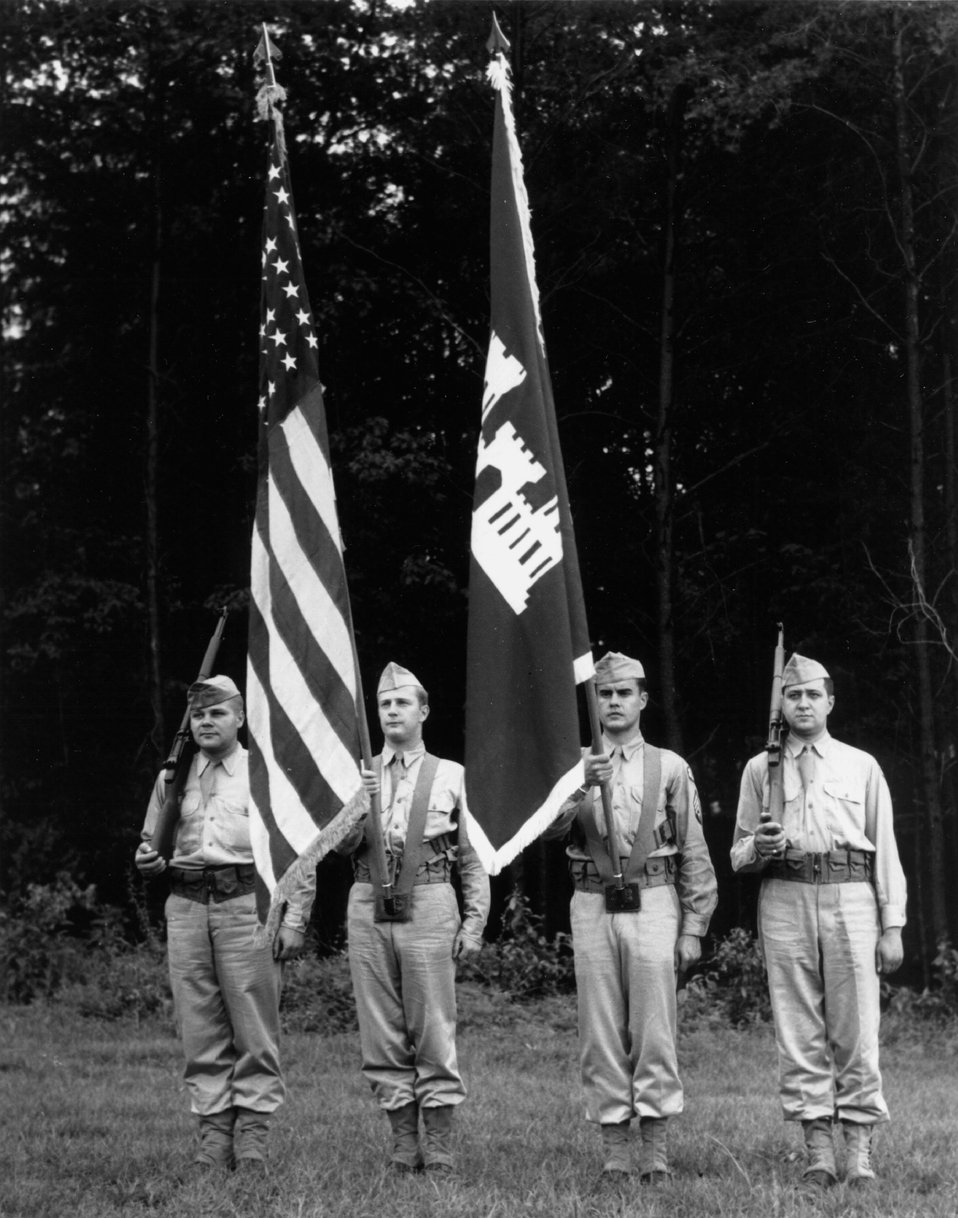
Army Color Guards. c. 1945